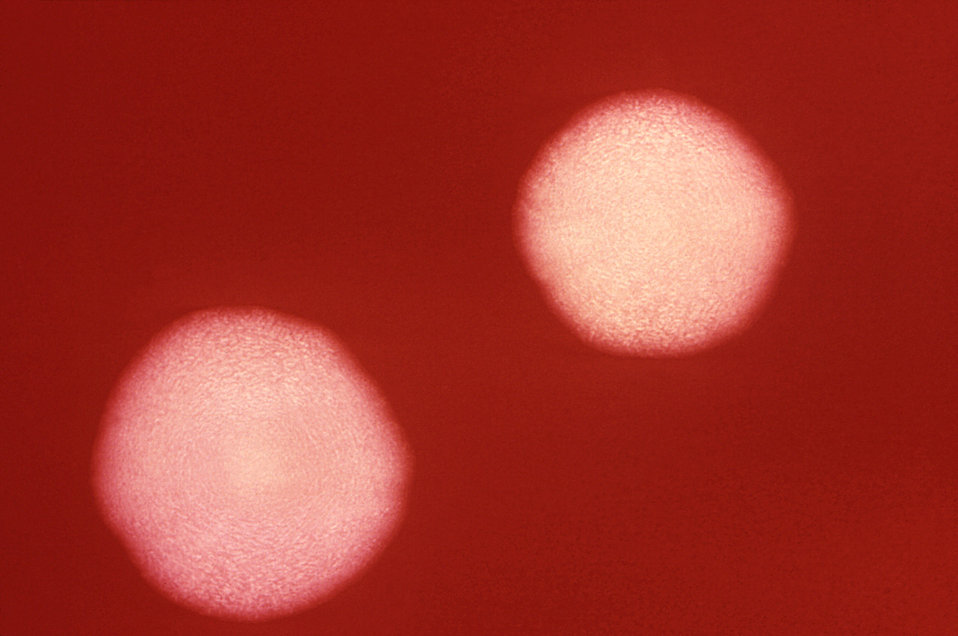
This 1972 photograph depicts two Bacteroides fragilis subsp. fragilis bacterial cultures grown on blood agar medium for 48 hours.